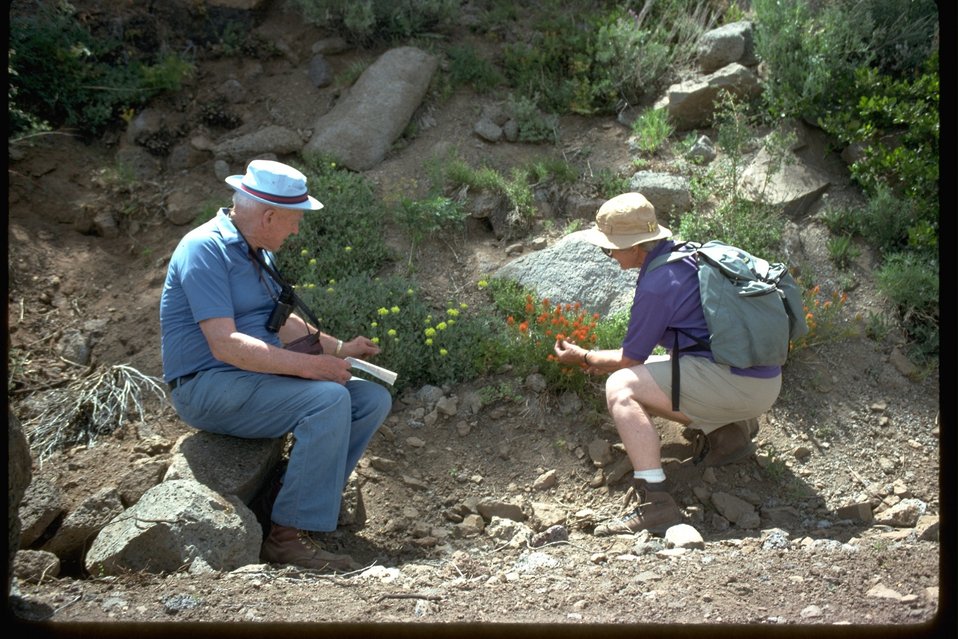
Botanizing" in the Rooster Comb Area of the Steens Mountain.